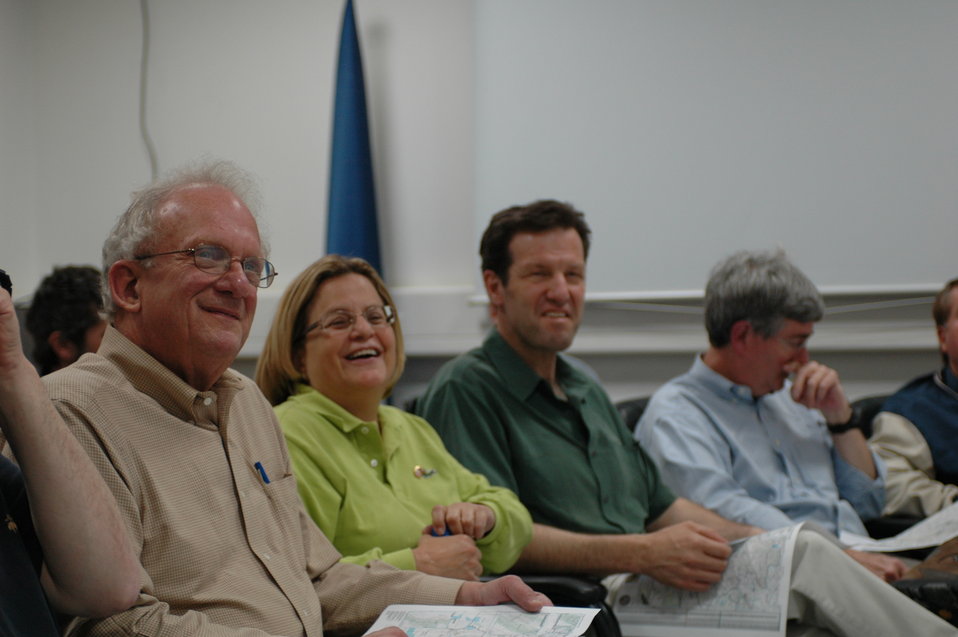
CODEL Berman